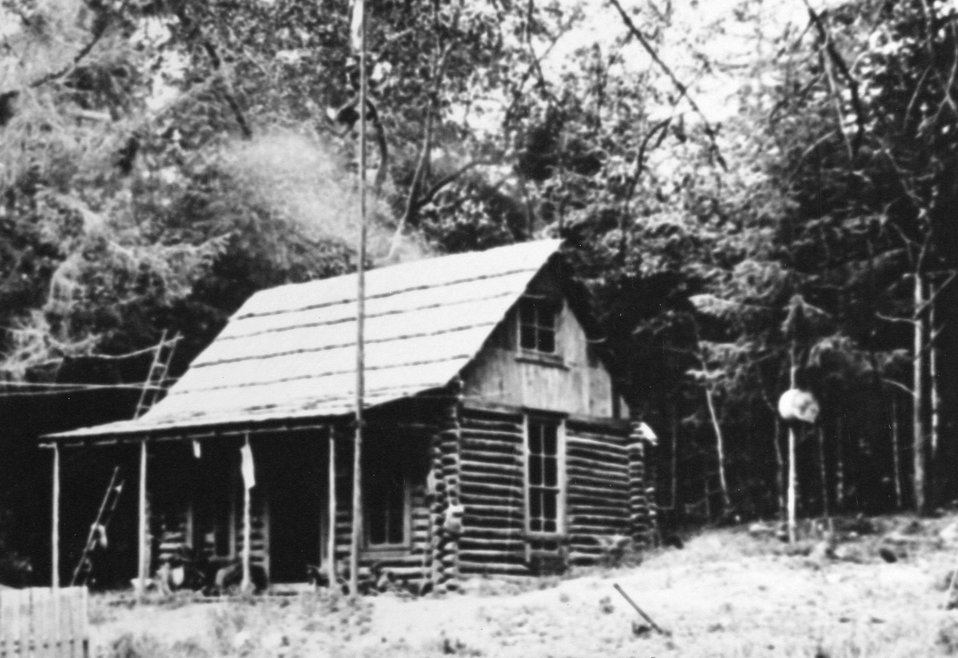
Price Cpsey Cabin